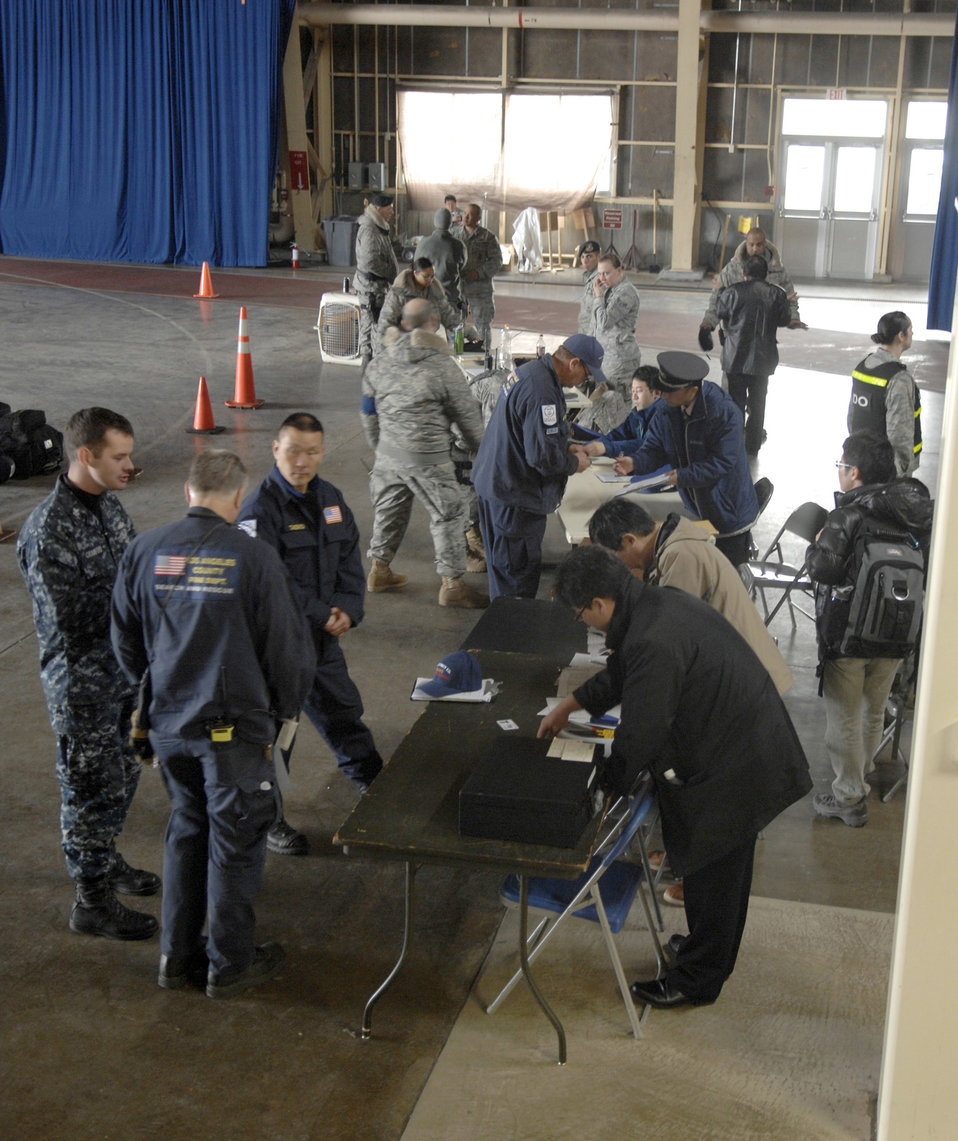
Emergency Response for Japan's Earthquake disaster

Members of the Los Angeles Search and Rescue team, Task Force 2 check in through a temporary customs facility at Misowa Air Force Base, Japan during an emergency response on March 13, 2011. Aircrew from the 4th Airlift Squadron, McChord AFB, Wash. are transporting members and equipment for Los Angeles Search and Rescue team to Japan to aid in recovery and care of victims of the recent earthquake.